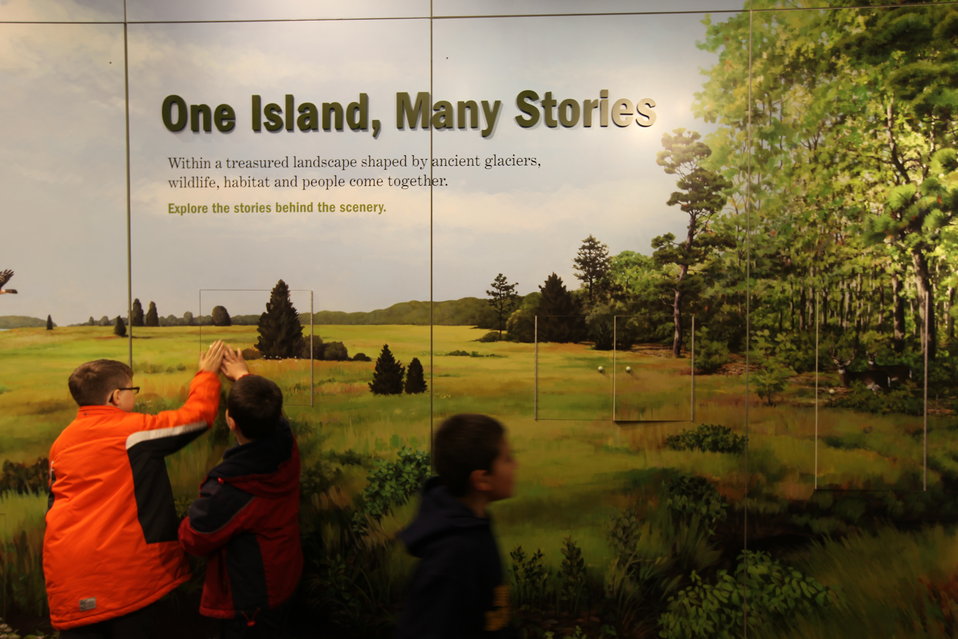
Kids interact

Kids interacting with one of the many exhibits in the Center.